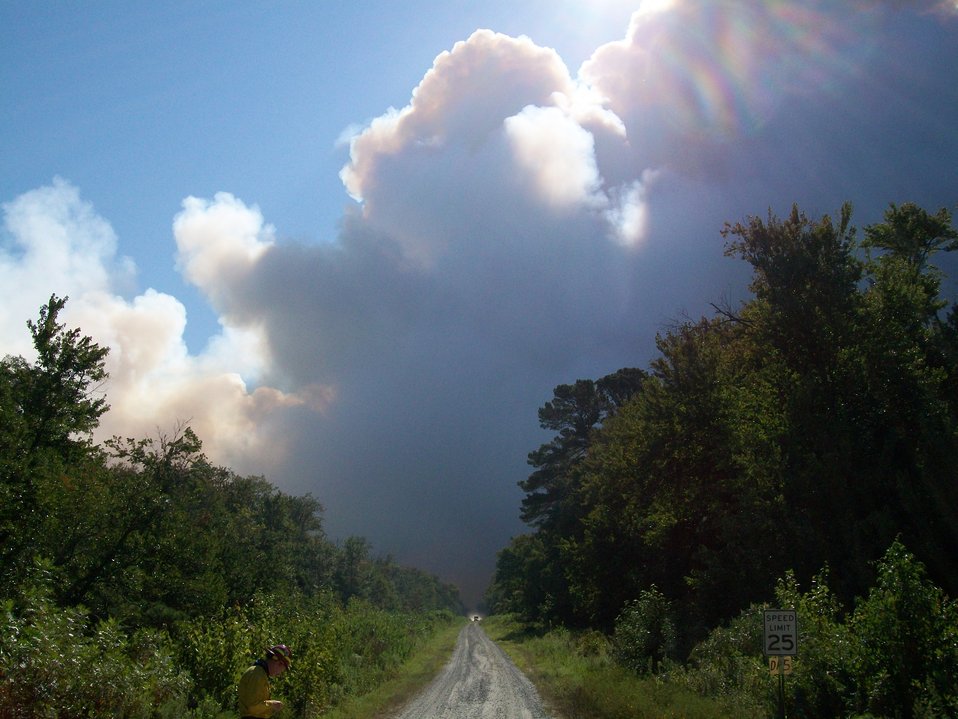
Early smoke

Suffolk, VA, August 2011. Early on in the Lateral West Fire at Great Dismal Swamp National Wildlife Refuge, smoke billowed as the fire raged through brush, grass, and standing and fallen dead trees.